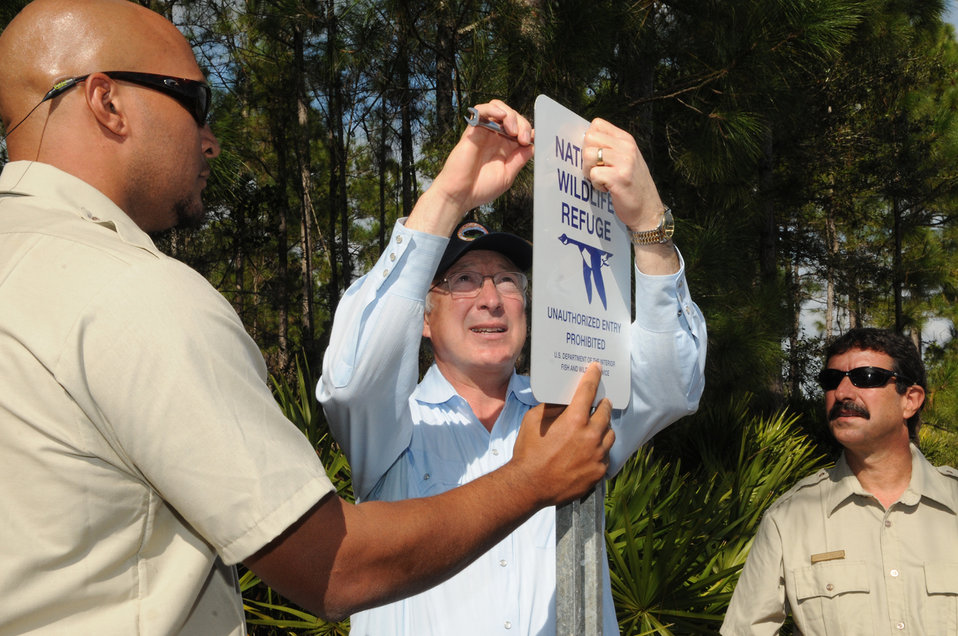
Secretary Ken Salazar and Keenan Adams Post Sign for Refuge